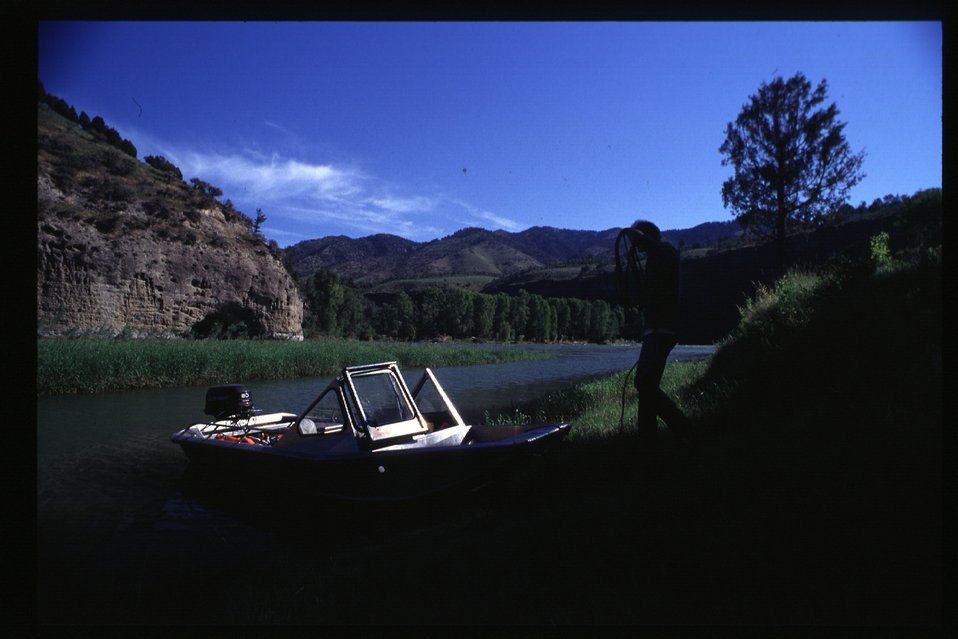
Boat fishing South Fork of Snake River Idaho Falls Field Office USRD Upper Snake River District